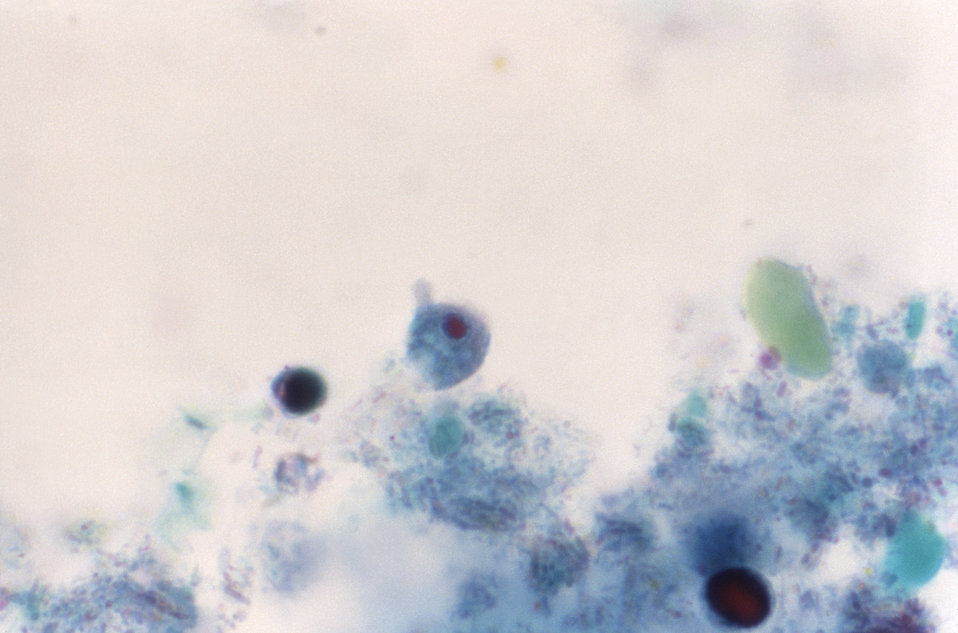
This trichrome-stained photomicrograph revealed the presence of a parasitic Iodamoeba b�ii trophozoite, which contained well-visualized achromatic granules within its cytoplasm.